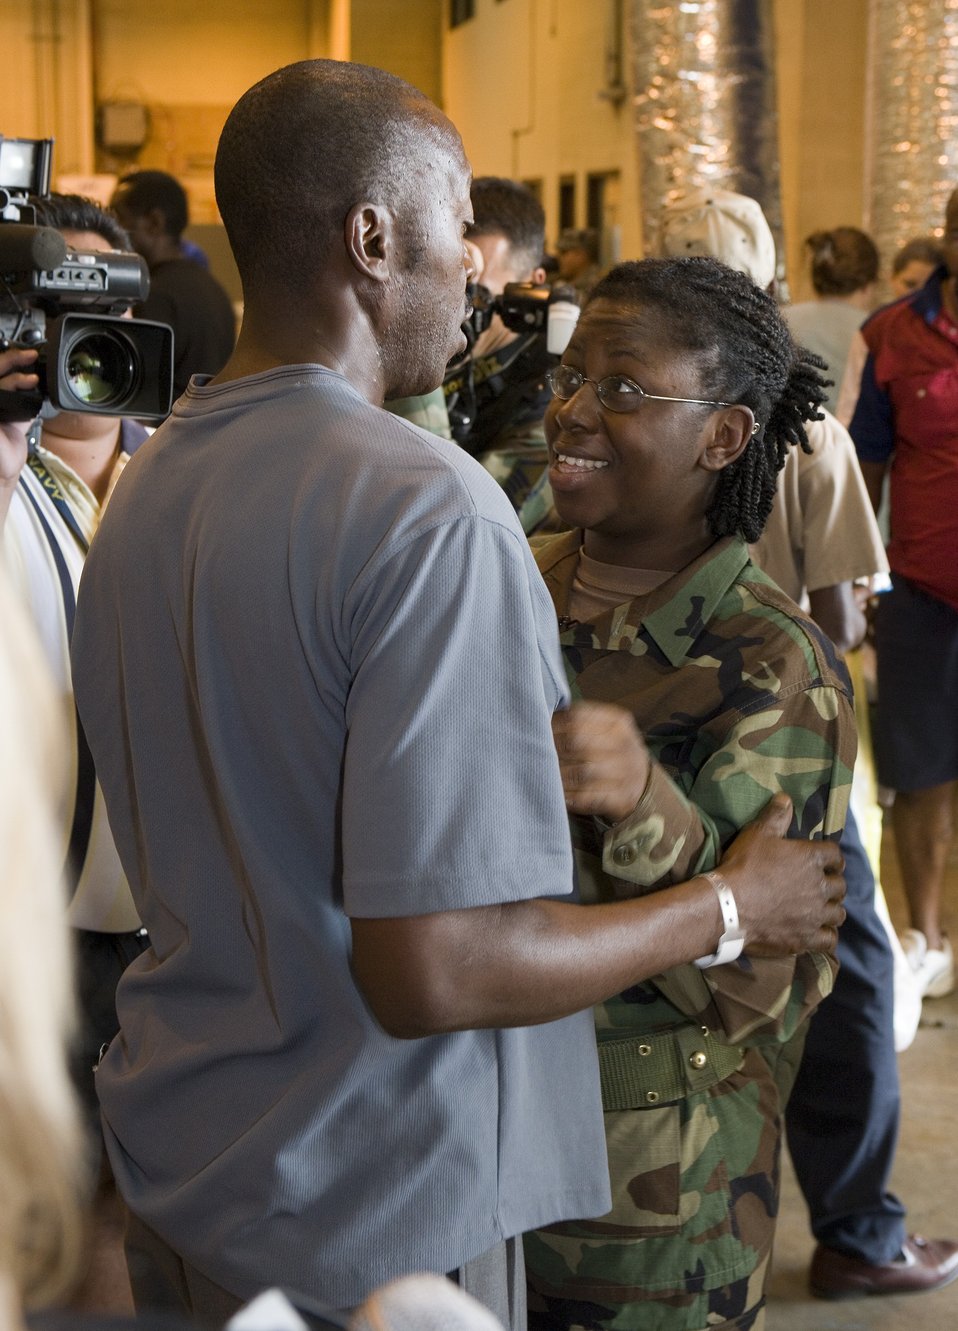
Reunited

SAN ANTONIO -- Trainee Tylar Pittman reunites with her father, Timothy, on Sept. 6 after he was evacuated from New Orleans. She received word on her first day of basic military training at nearby Lackland Air Force Base that her father had become stranded and rendered homeless by the storm.